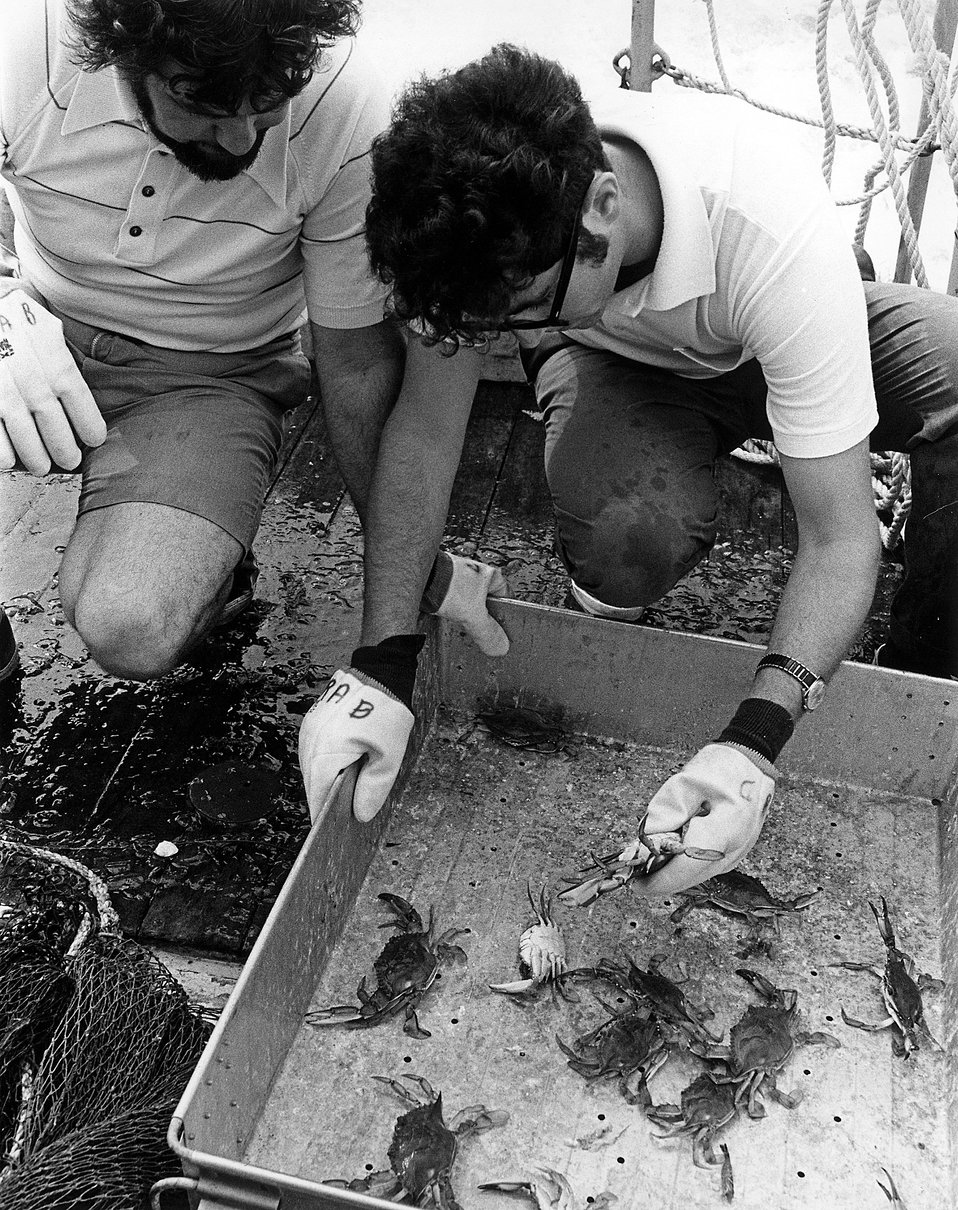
University of Maryland scientists check the size, number and sex of Maryland Blue Crabs captured in the Chesapeake. Circa 1972.